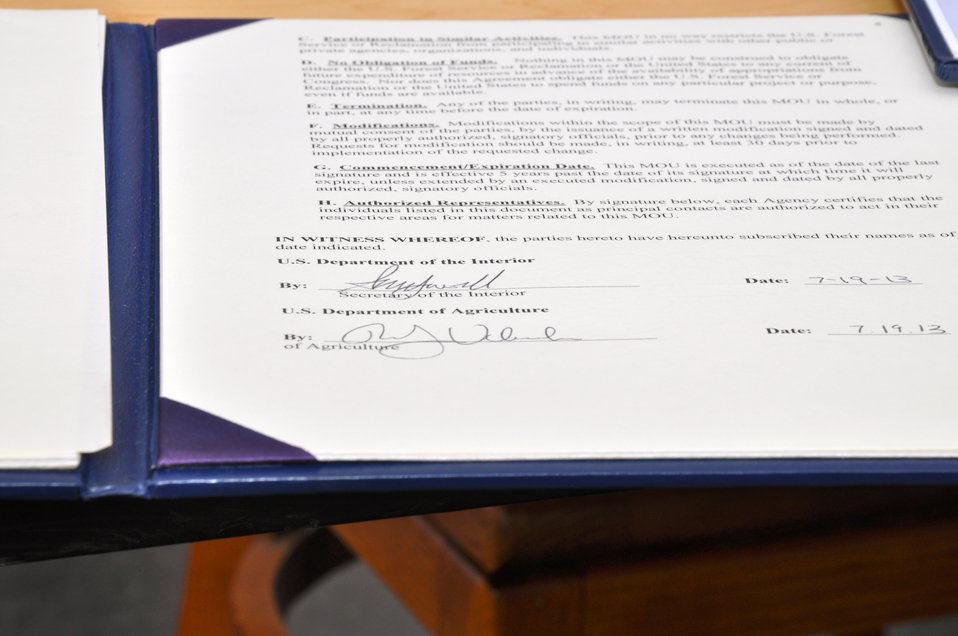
Agriculture Secretary Tom Vilsack and Interior Secretary Sally Jewell sign a Memorandum of Understanding (MOU) at the Horsetooth Reservoir in Fort Collins, CO on Jul. 19, 2013. This MOU will facilitate activities such as wildfire risk reduction through forest thinning, prescribed fire and other forest health treatments; minimizing post-wildfire erosion and sedimentation; and restoring areas that are currently recovering from past wildfires through tree planting and other habitat improvements.